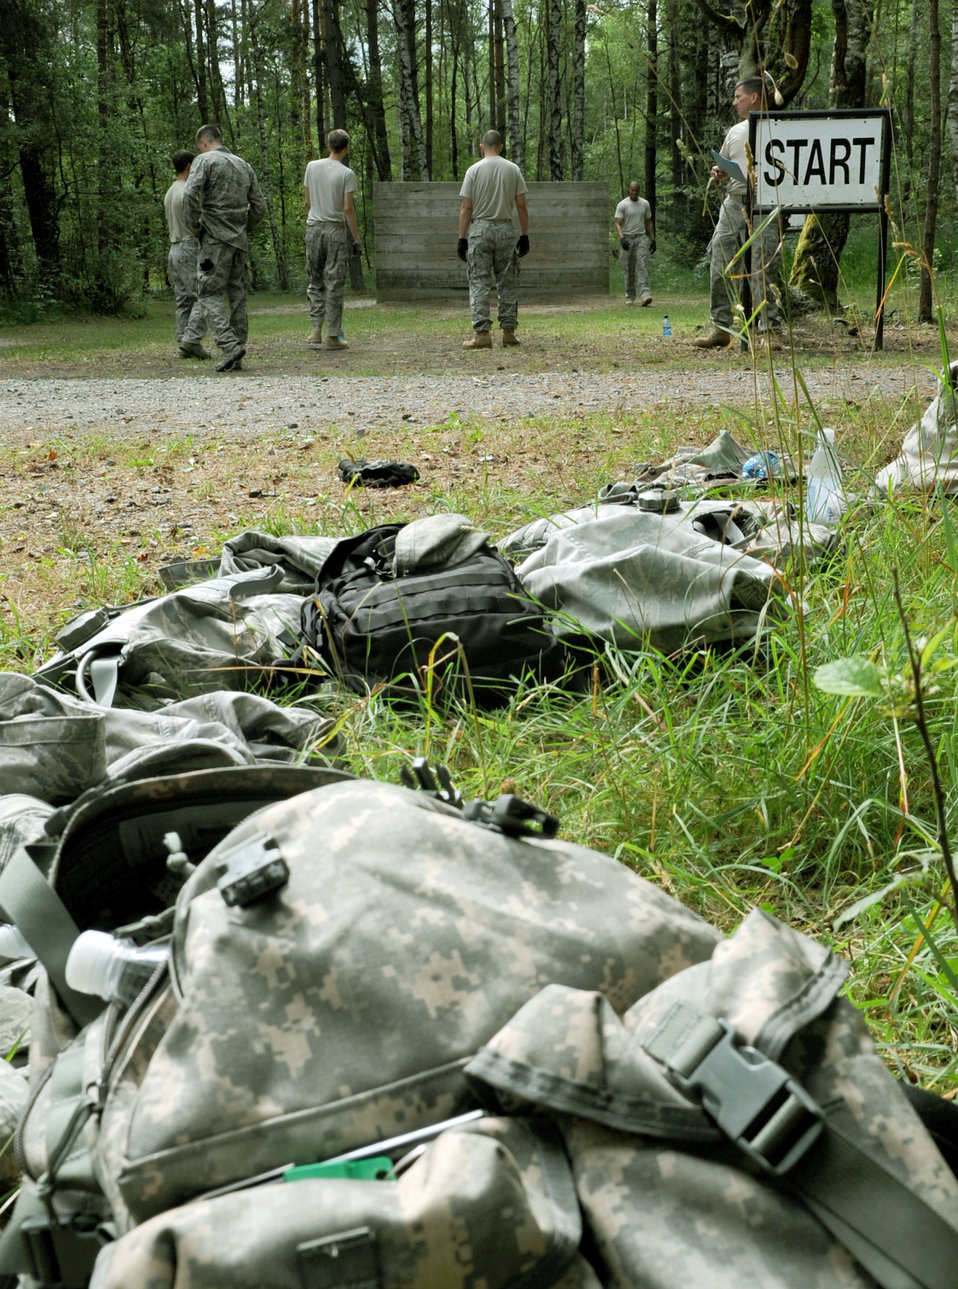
Exercise Allied Strike 10

Joint terminal attack controllers start an obstacle course July 23, 2010 during Exercise Allied Strike 10, at the U.S. Army's training area in Grafenwoehr, Germany.